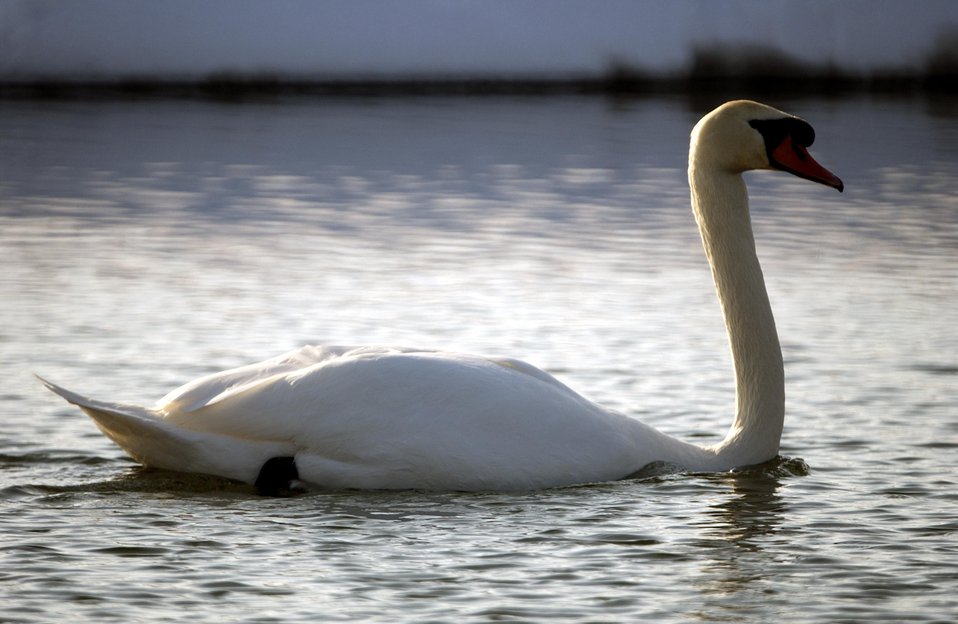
MUTE SWAN IN THE MAIN INJECTOR POND OF THE FERMI NATIONAL ACCELERATOR LABORATORY SITE.

THE SITE IS HOME TO A VARIETY OF BIRDS AND VEGETATION. THE FERMI NATIONAL ACCELERATOR LAB ADVANCES THE UNDERSTANDING OF THE FUNDAMENTAL NATURE OF MATTER AND ENERGY BY PROVIDING LEADERSHIP AND RESOURCES FOR QUALIFIED RESEARCHERS TO CONDUCT BASIC RESEARCH AT THE FRONTIERS OF HIGH ENERGY PHYSICS AND RELATED DISCIPLINES.